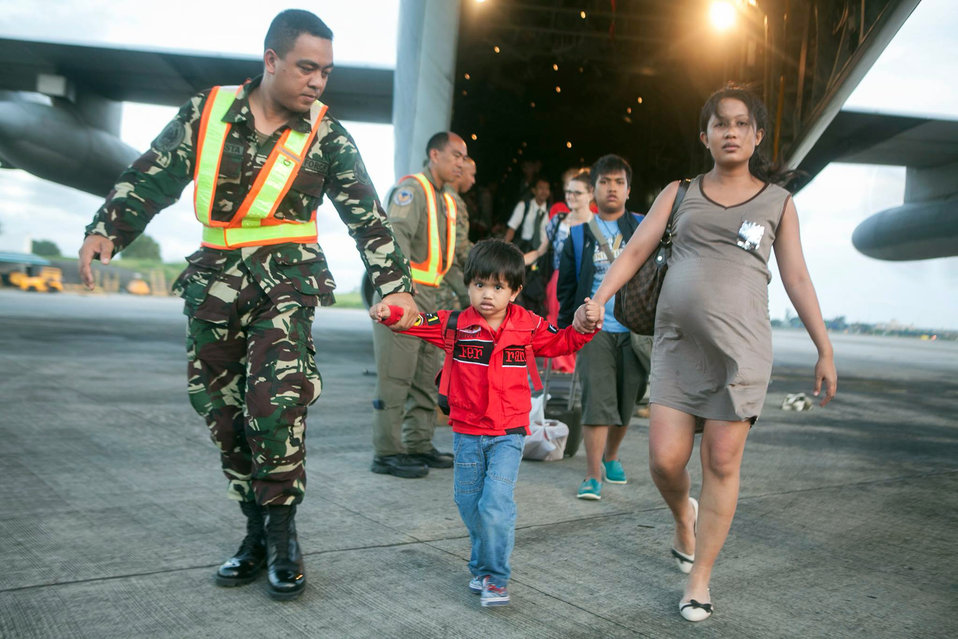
A Filipino Airman Offloads Civilians

An airman with the Philippine Air Force offloads Filipino civilians out of a U.S. Marine C-130 Hercules aircraft at Villamor Air Base in the Philippines on November 13, 2013. United States marines and sailors are supporting the Armed Forces of the Philippines by providing humanitarian assistance and disaster relief to affected areas following Typhoon Yolanda.